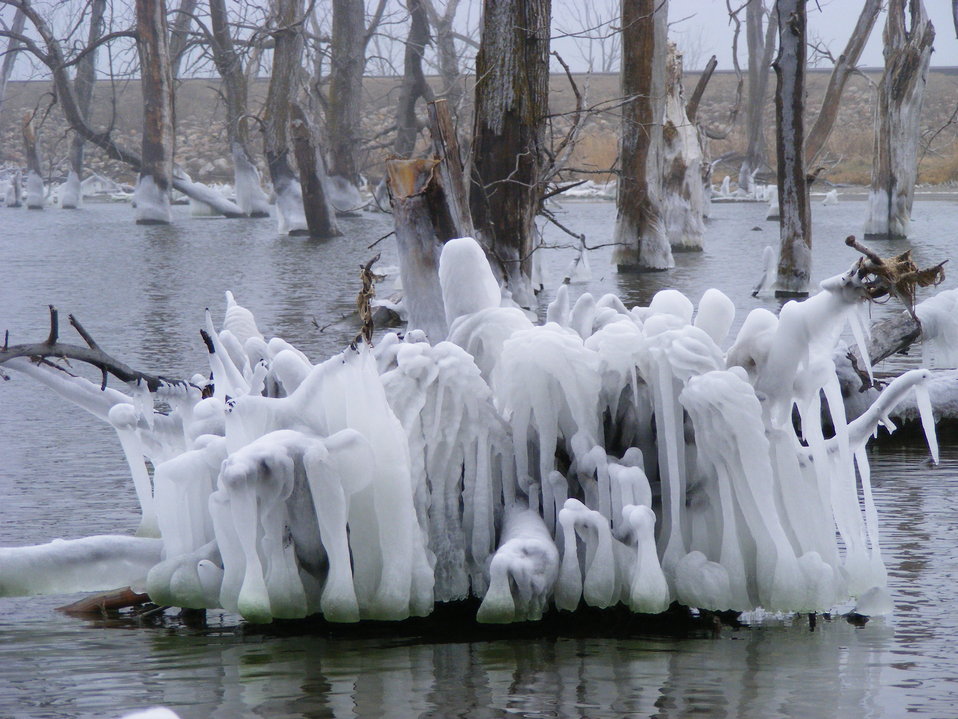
Ice Formations

When it's cold enough in late fall at Waubay National Wildlife Refuge but the lake isn't frozen yet, sometimes interesting ice formations will form around submerged trees and roots after windy days.